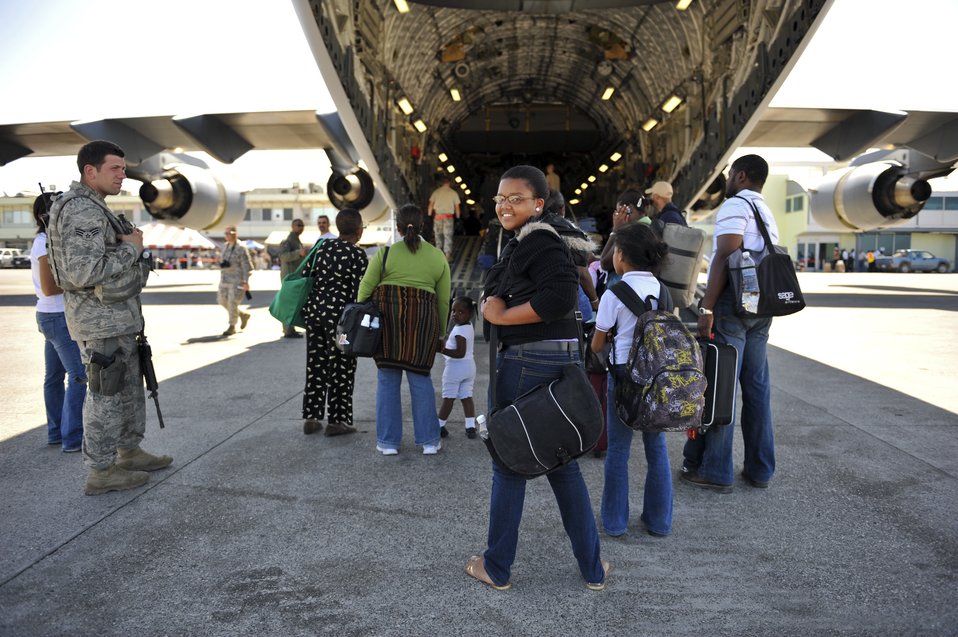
Evacuation

A Haitian girl smiles while standing in line to board at the rear cargo door of a C-17 Globemaster III at Toussaint L'Ouverture International Airport in Port-au-Prince, Haiti, Jan. 23, 2010. Aircraft from all over the world fly in and out to drop off humanitarian aid and transport people out of the Haiti in the aftermath of the devastating earthquake that struck the country Jan. 12.